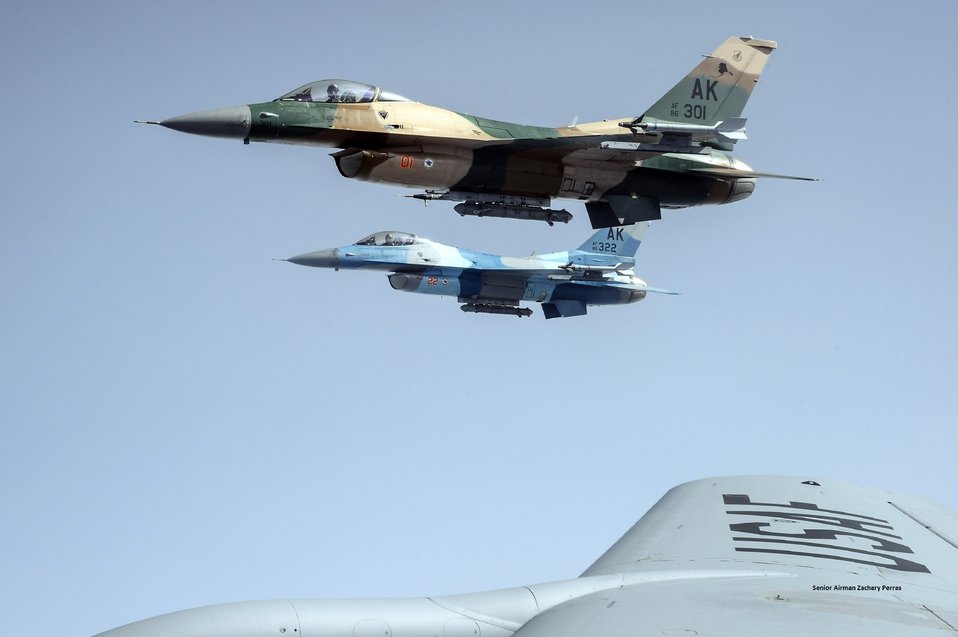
In flight refule f-16 falcons

Two f-16 fighting falcons from the 18th aggressor squadron fly alongside a kc-135 stratotanker during red flag-alaska 14, may 15, 2014 over the joint pacific alaska range complex. the 18th as out of eielson air force base, alaska, trains allied and.